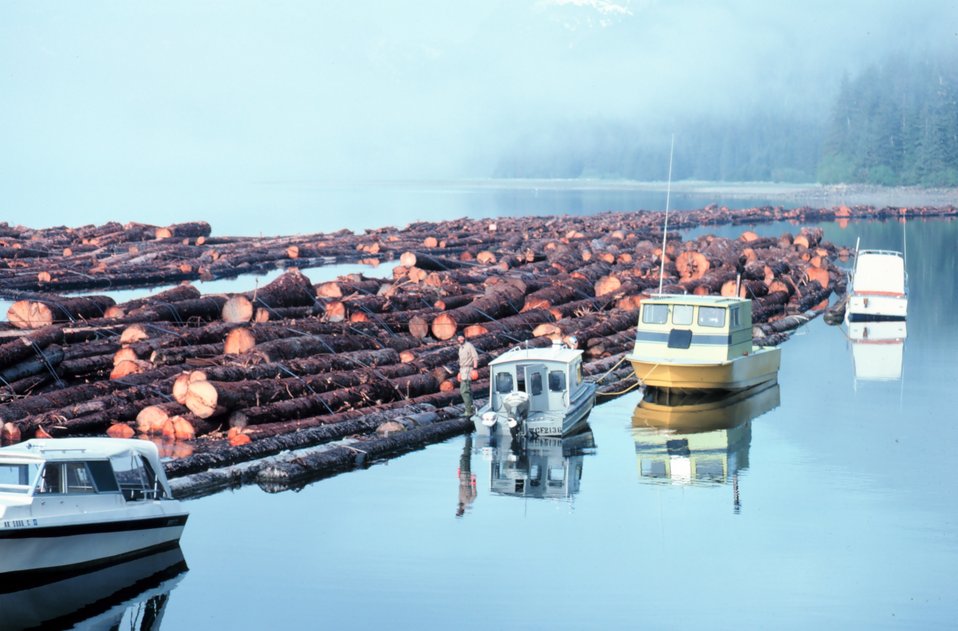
Logs rafted for towing. Lt.(j.g.) Tuell standing on raft.